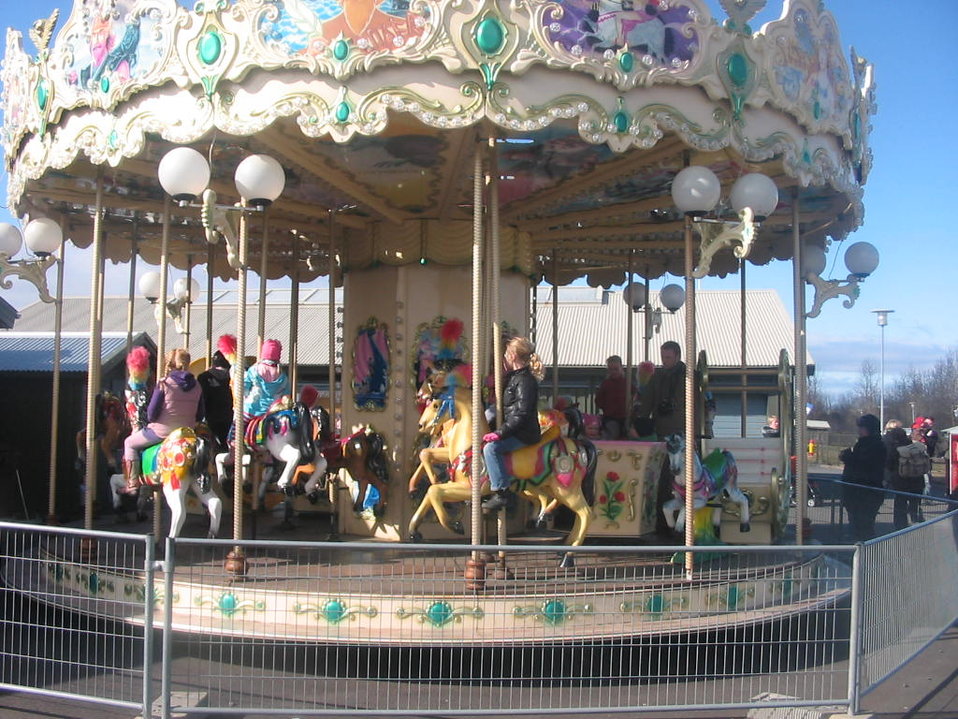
Українська: Дитяча карусель в зоологічному саді, місто Рейк'явік, Ісландія Íslenska: Hringekja í Húsdýra og fjölskyldugarðinum. Carousel horses in Reykjavik Zoo and Family Park, Iceland.